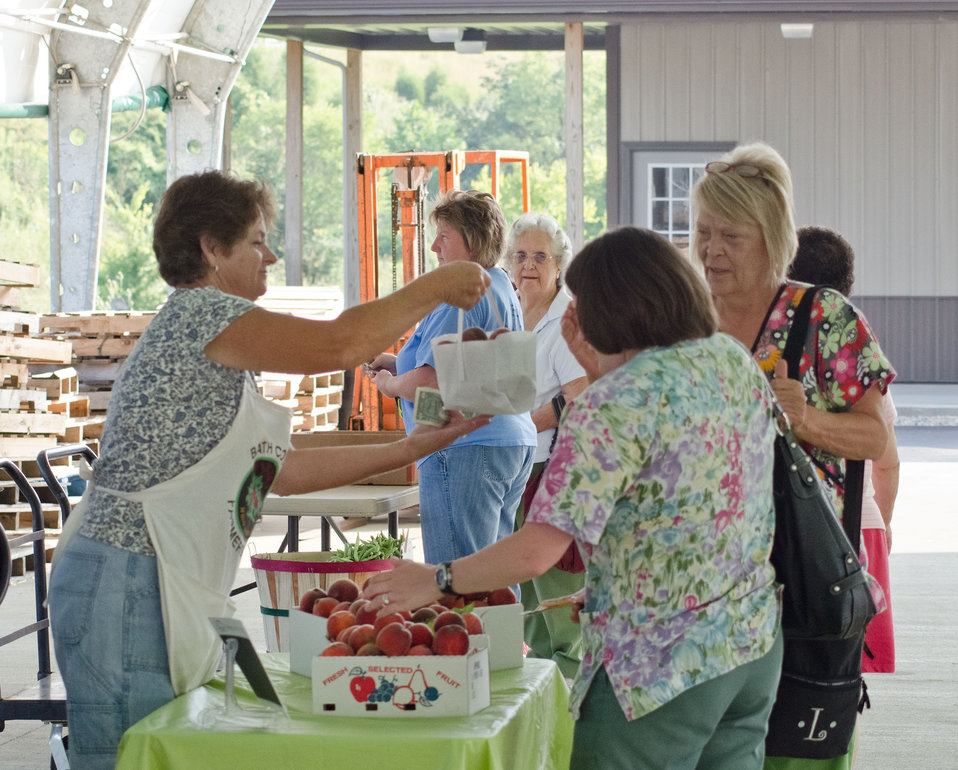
The popular Mary 'The Peach Lady' Manley (left) picked the peaches that day and makes the sale at the Bath County Agricultural Education and Marketing Center, Owingsville, KY, on Friday, July 15, 2011. The Center was the recipient of a $400,000 Rural Business Enterprise Grant. It has given farmers and producers from Bath and surrounding counties the opportunity to manufacture and market their locally grown and locally produced value-added and “Kentucky Proud” branded products, including but not limited to, fresh produce, artisan crafts and specialty food products. The Center is open year-round and allow residents to sell products in four different retail categories, including Kentucky products, regional crafts, “green” groceries and bakery/deli. Several producers expressed their gratitude for Rural Development’s assistance in making the center a reality. The project was made possible through funding the American Recovery and Reinvestment Act of 2009 enacted by the 111th United States Congress in February 2009 and signed into law on February 17, 2009, by President Barack Obama.